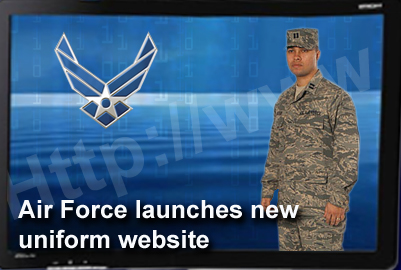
New uniform website